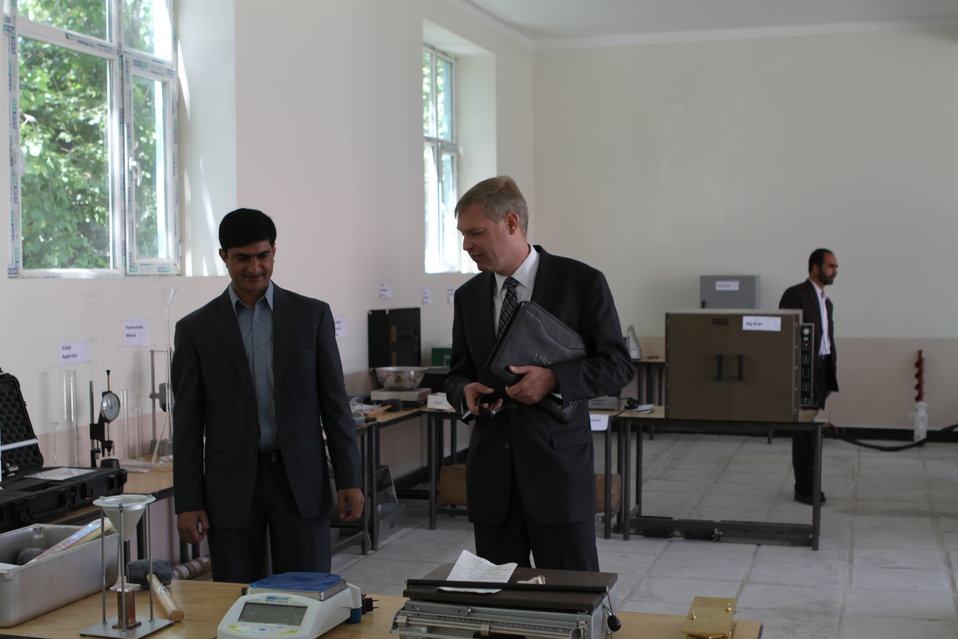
100522 ATVI Graduation 006